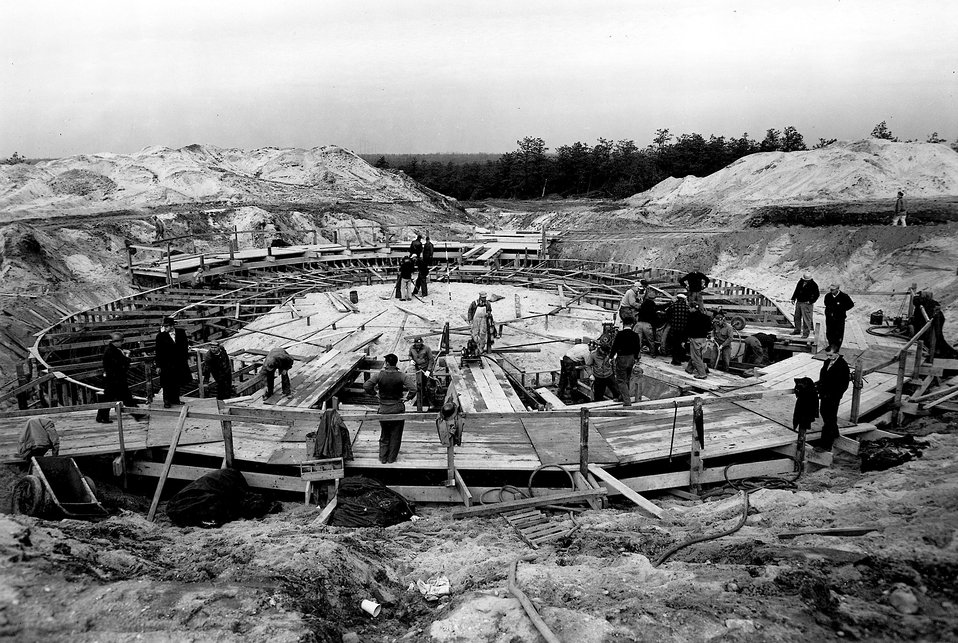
A wooden form into which concrete was poured for
foundation shown in photograph No. 1-110-9.